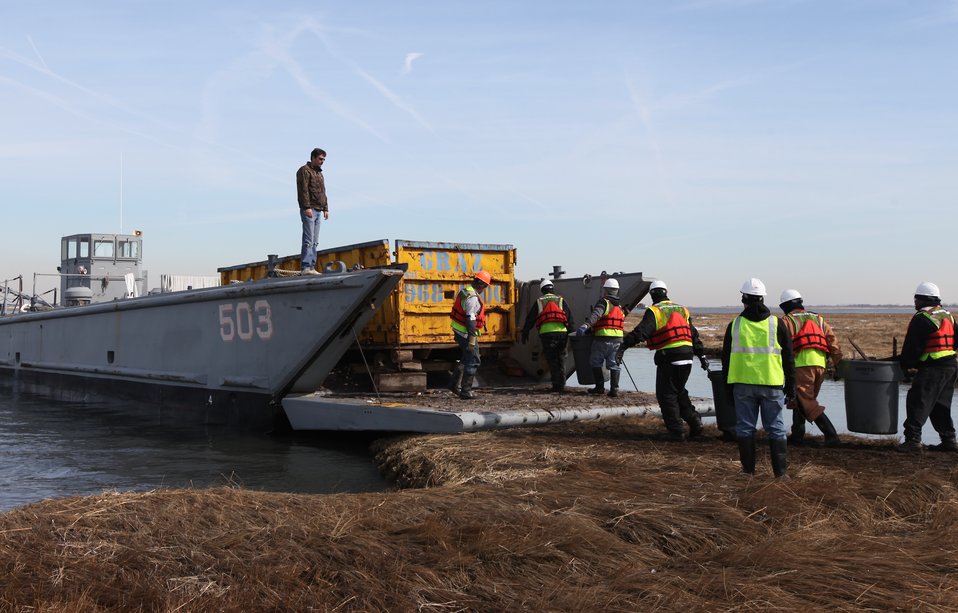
Ground crew transfers debris to watercraft for removal at Lido Beach WMA.